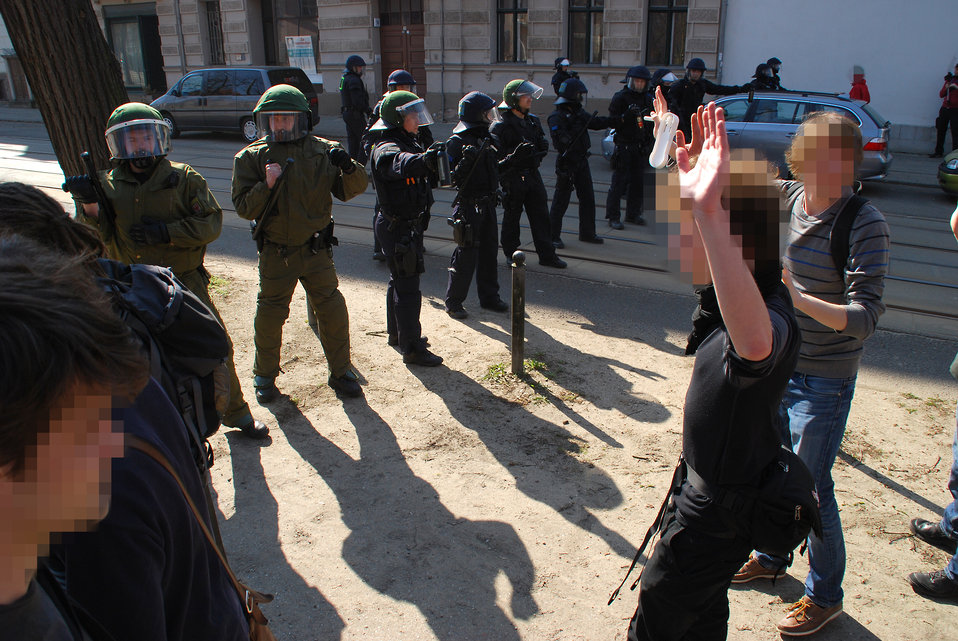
Proteste gegen den Nazi-Aufmarsch am 24.3.2012 in Frankfurt (Oder)